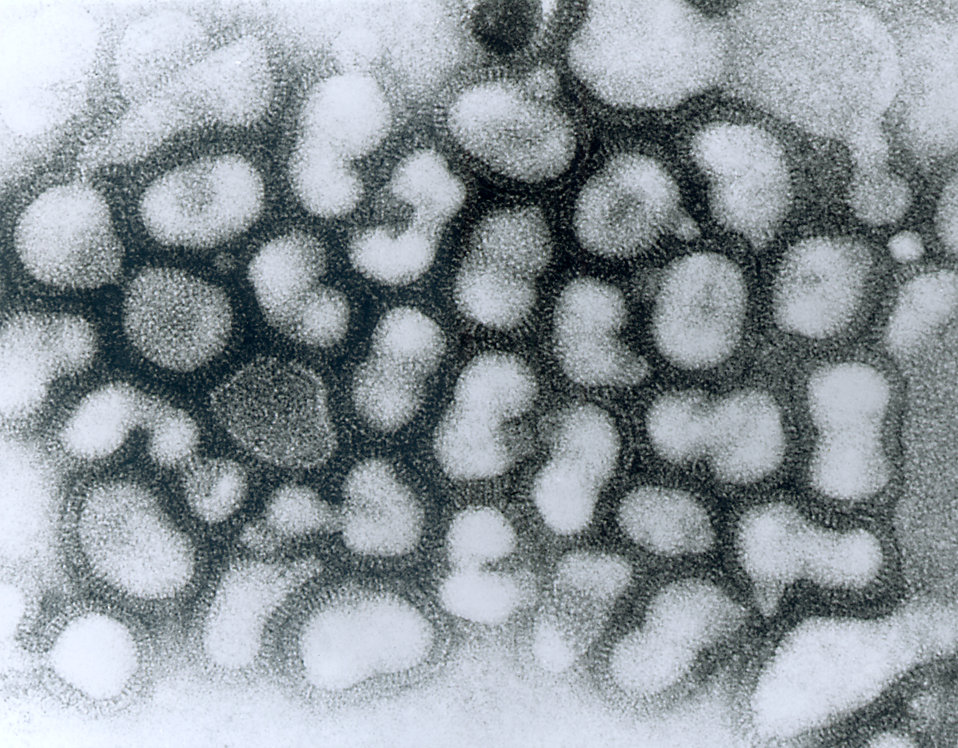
This transmission electron micrograph (TEM) depicts numbers of influenza A virions while in their late passage growth phase.